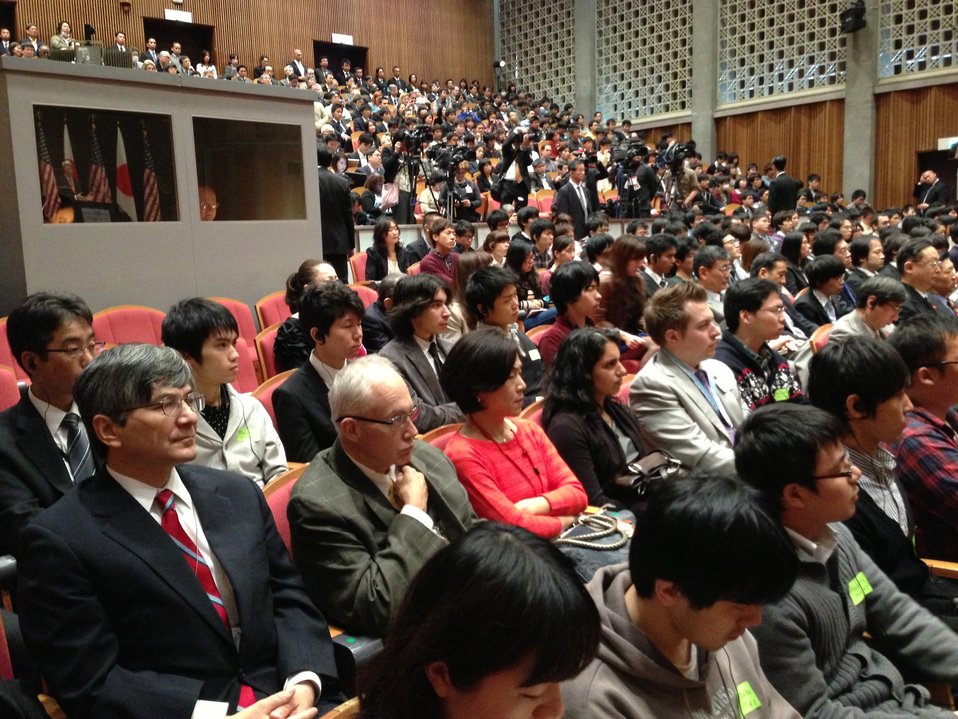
Audience at the Tokyo Institute of Technology Listens as Secretary Kerry Speaks

An audience of several hundred listens as U.S. Secretary of State John Kerry delivers a speech about U.S.-Pacific relations at the Tokyo Institute of Technology in Tokyo, Japan, on April 15, 2013.